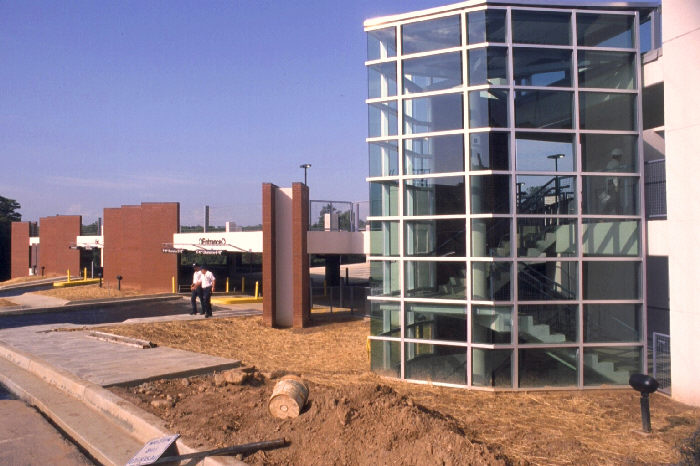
Parking deck, Roybal Campus.